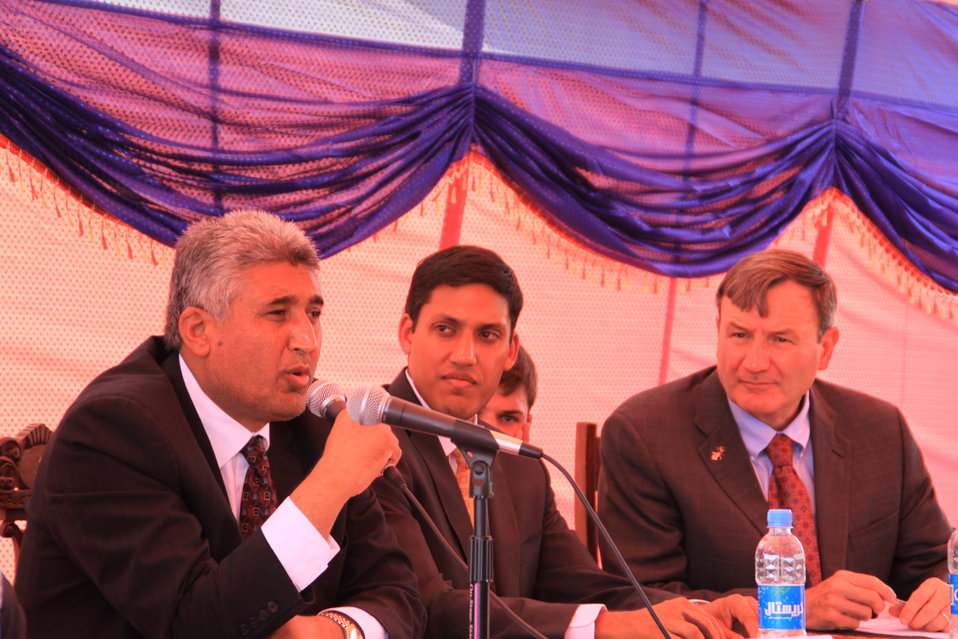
Badam Bagh Farm